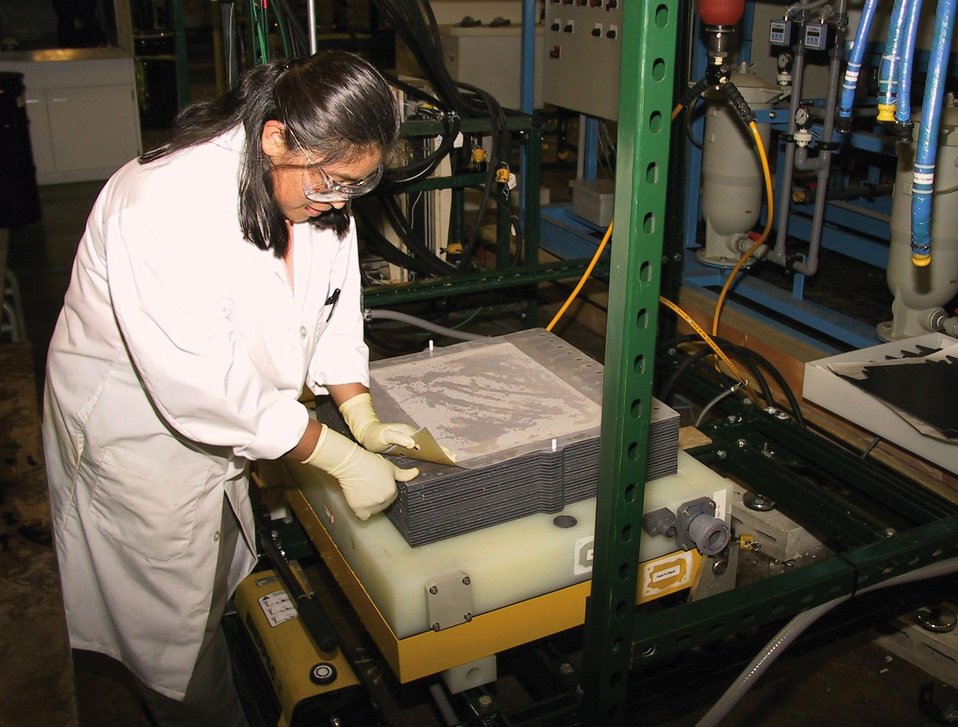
ARGONNE CHEMICAL ENGINEER INSPECTS ANL'S ELECTRODE IONIZATION WAFER STACK AFTER ASSEMBLY.

ANL HAS DEVELOPED A NEW SALT REMOVAL PROCESS THAT IS CHEAPER AND FRIENDLIER TO THE ENVIRONMENT THAN CONVENTIONAL INDUSTRIAL METHODS. THIS PROCESS COULD HELP REDUCE COSTS AND TOXIC CHEMICAL WASTES FOR THE CORN SYRUP INDUSTRY AND MANY OTHER INDUSTRIES THAT REMOVE SALT AT SOME POINT DURING MANUFACTURE. ANL'S ELECTRODE IONIZATION PROCESS COSTS HALF AS MUCH AS CONVENTIONAL DESALINATION AND GENERATES ONLY HALF THE WASTE.